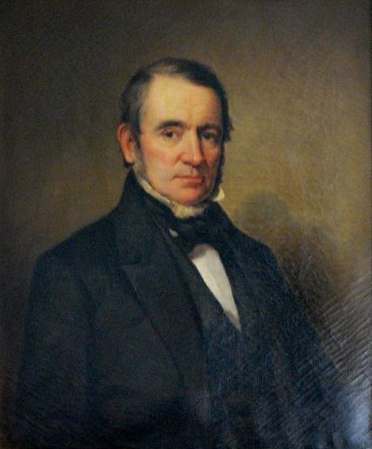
St. John Smith by John Greenleaf Cloudman